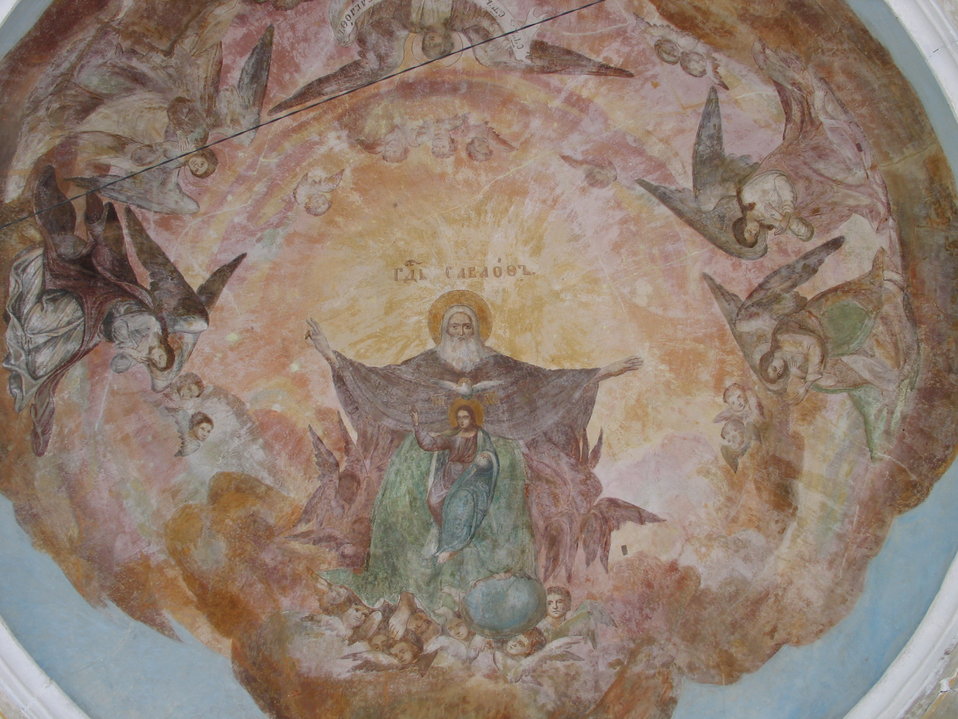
Español: Fresco en la catedral.